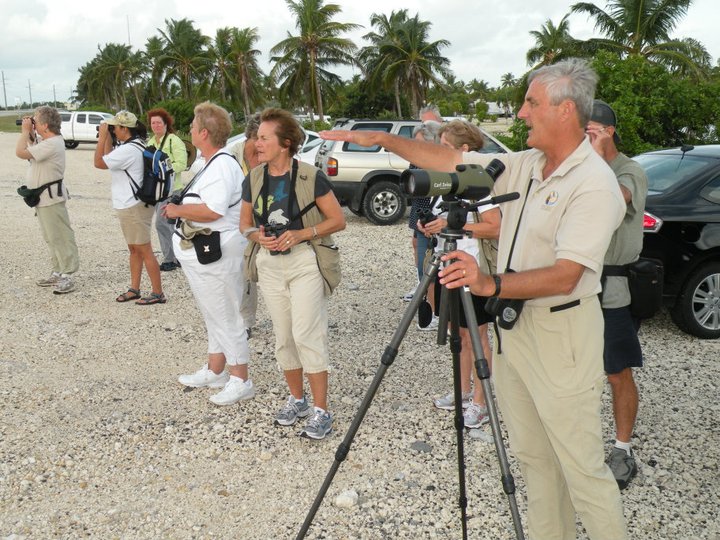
Bird tour, Florida Keys

Florida Keys National Wildlife Refuge. Bird tour led by Pete Dunn, during 2010 birding festival